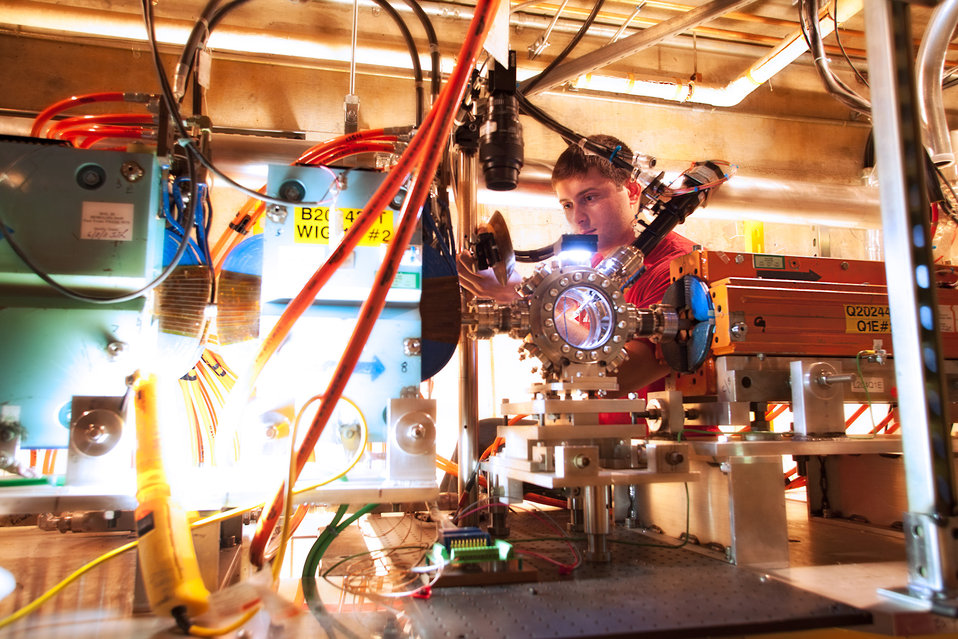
Photo of the Week: What does a particle accelerator have in common with your Thanksgiving turkey?

At SLAC National Accelerator Laboratory, scientists are using the Facility for Advanced Accelerator Experimental Tests, also known as FACET, to research accelerator science and high-energy density physics.

SLAC's particle accelerator may be two miles long, but researchers at FACET are working to develop more compact versions that could be widely used in medicine and industry -- particle accelerators are used for cancer research, processing computer chips, and even producing the shrink wrap used to keep your Thanksgiving turkey fresh.

In this photo, Stanford graduate student Spencer Gessner assembles a camera that will monitor an X-ray spectrometer designed to measure FACET's beam energy.